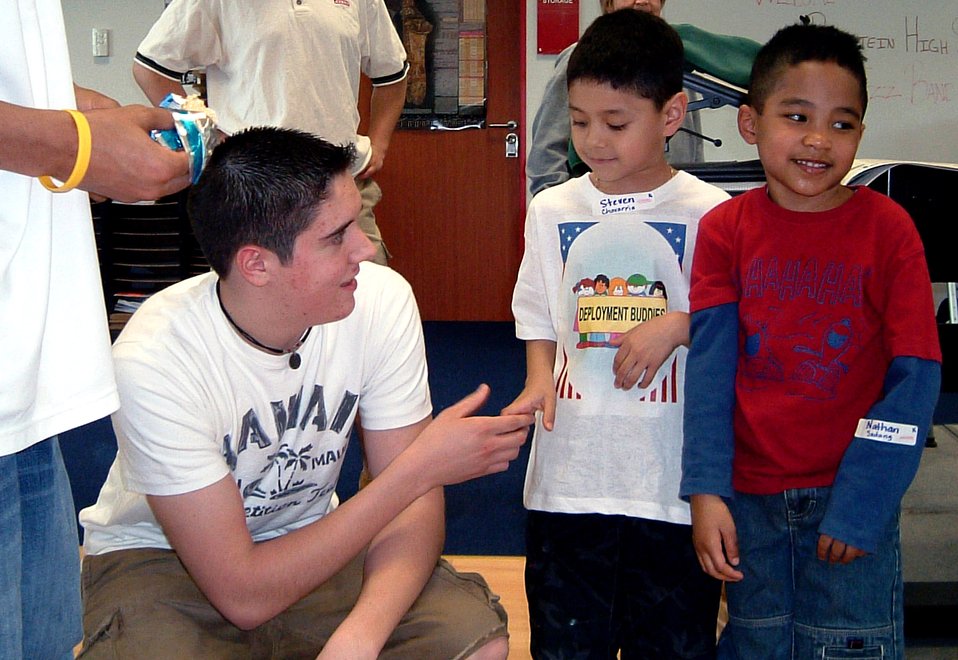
School program helps children cope with deployments

Ramstein High School students and elementary school children meet for the first time in the Deployment Buddies Program at Ramstein Elementary April 26 at Ramstein Air Base, Germany. The program helps elementary school students whose parents have deployed or will deploy. A high school student is assigned a buddy and continues the day with planned activities like dances, games, arts and crafts.